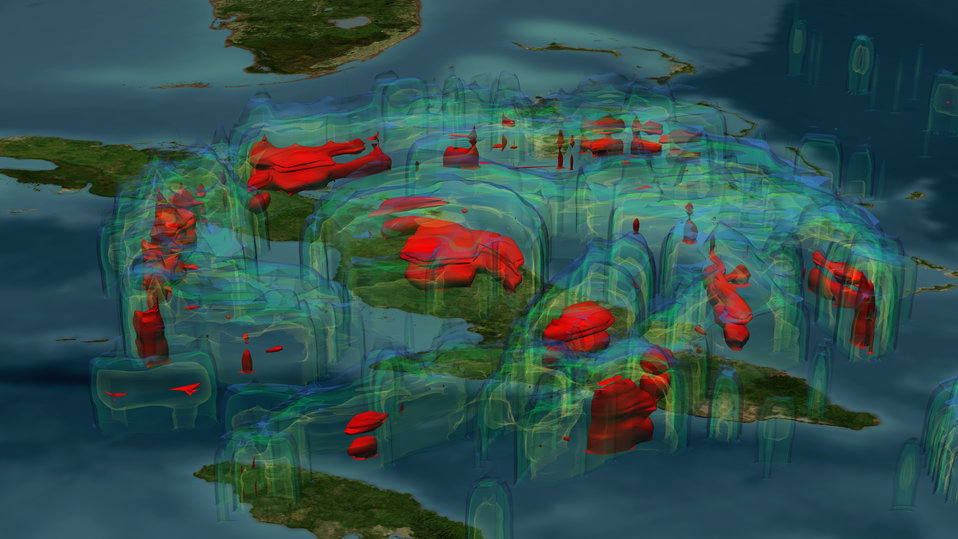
Hurricane Ike Slams Cuba at 7:04 EDT September 8, 2008